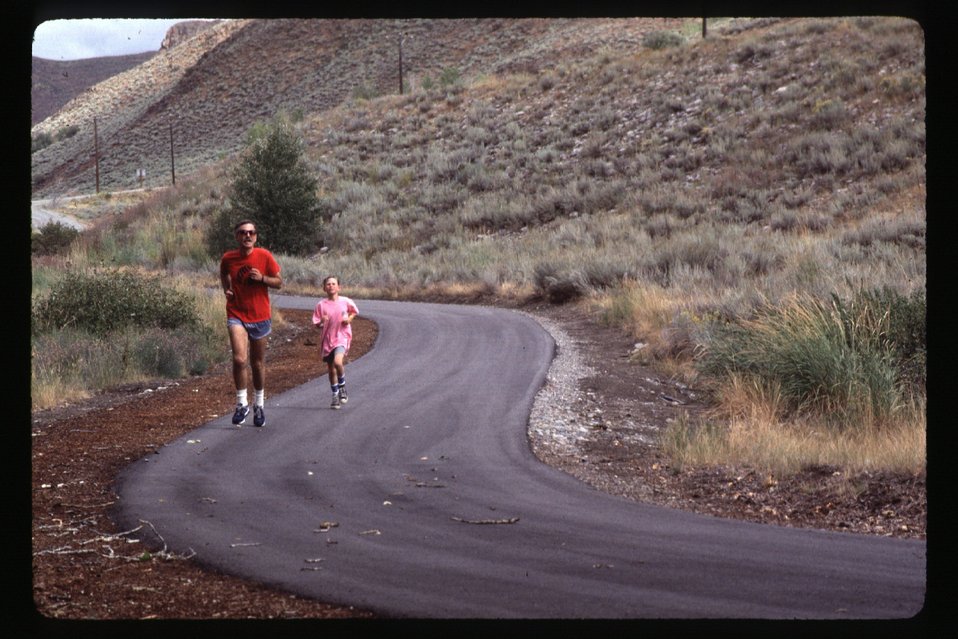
Recreation Scenic Biker Shoshone Field Office USRD Upper Snake River District